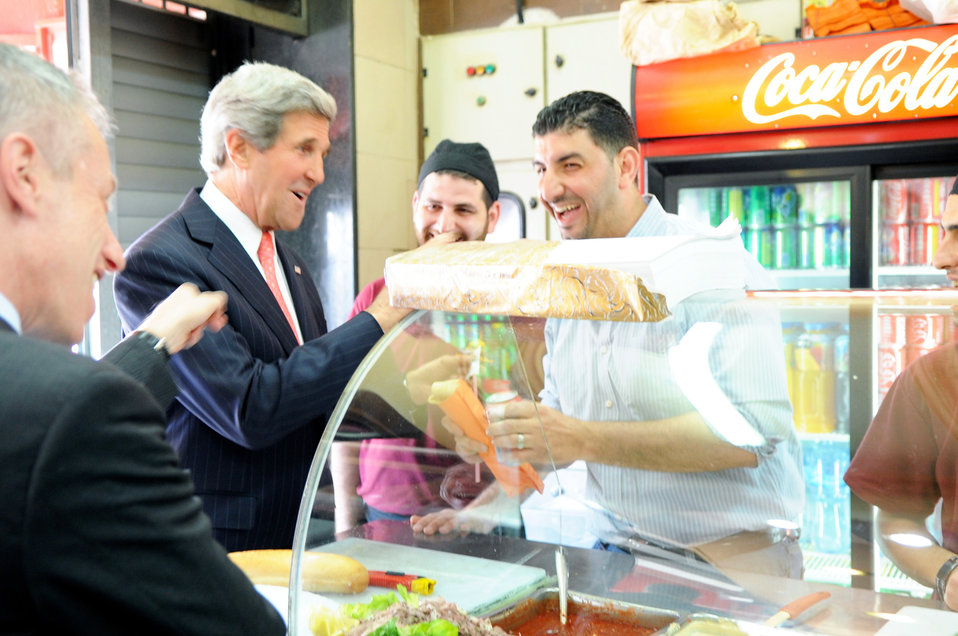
Secretary Kerry Chats With the Employees at a Shop in Ramallah

U.S. Secretary of State John Kerry chats with the employees preparing his shawarma sandwich at a shop in Ramallah on May 23, 2013.